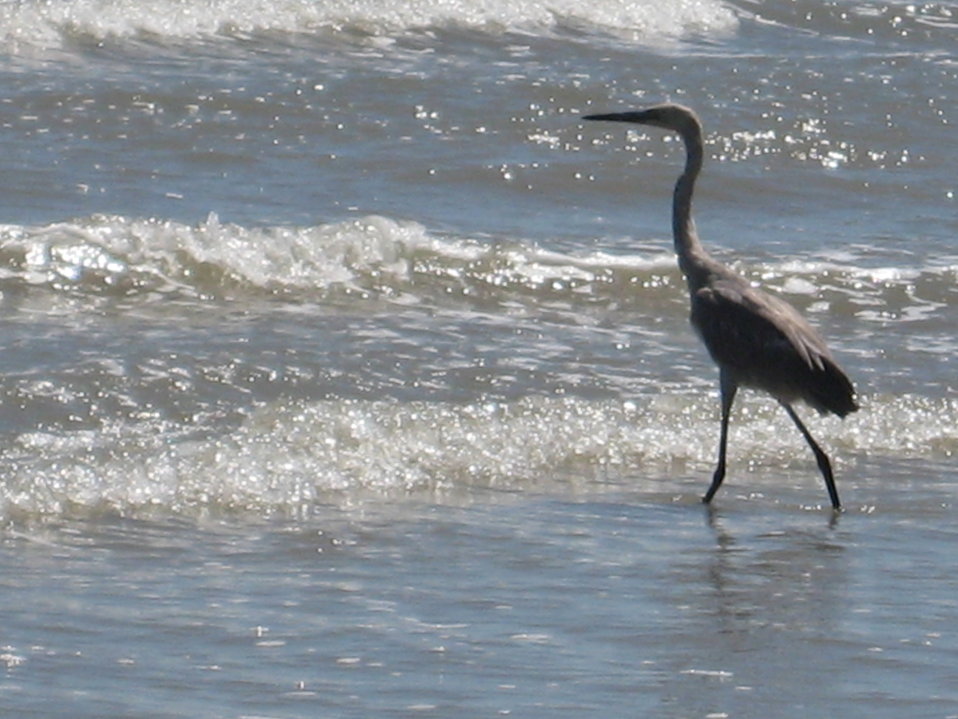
Blue heron in the surf, Texas